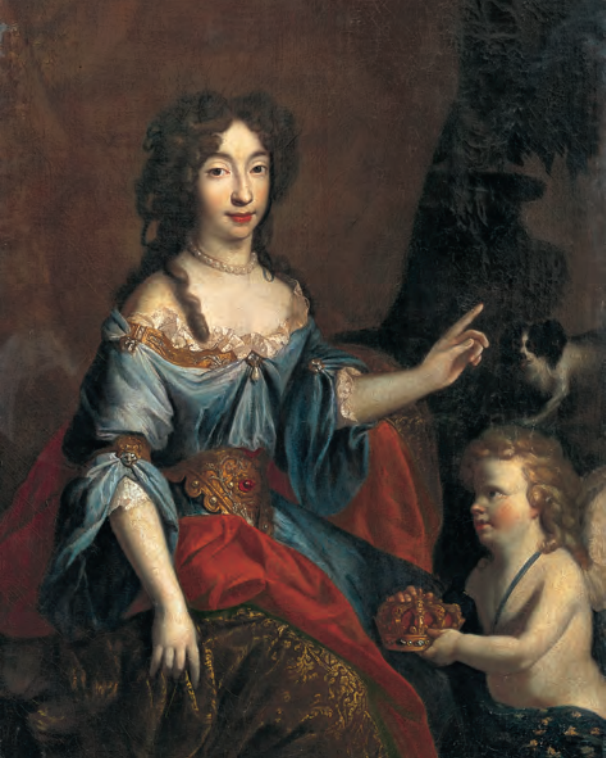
Princess Maria Anna Christina Victoria of Bavaria being handed the crown of the dauphine in 1680 prior to her marriage after François de Troy